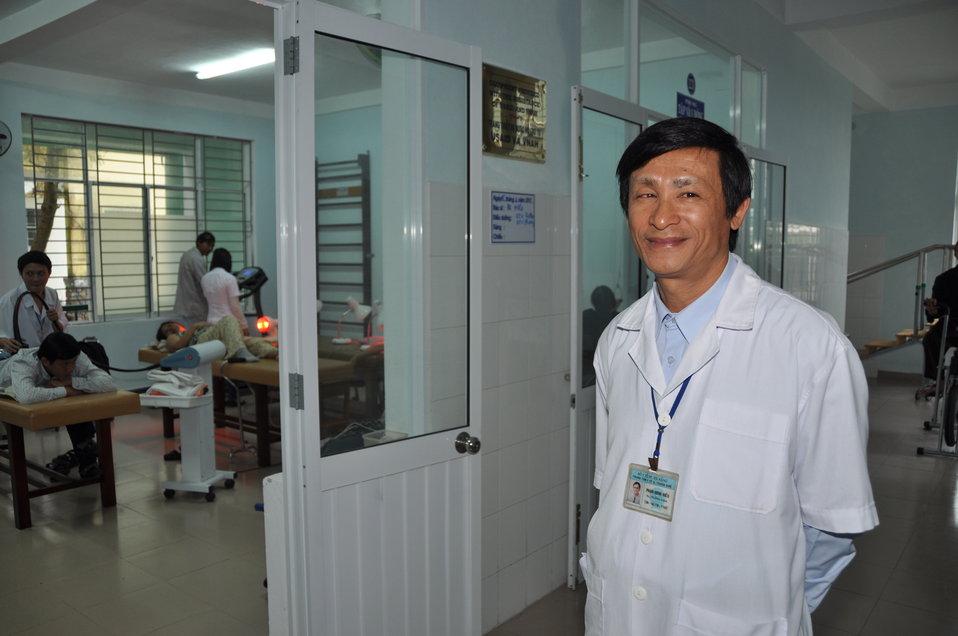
Dr. Pham Minh Hieu at Thanh Khe District Hospital

USAID-supported equipment and training help the staff at Thanh Khe District Hospital to meet the physical therapy needs of the disabled population of Danang.